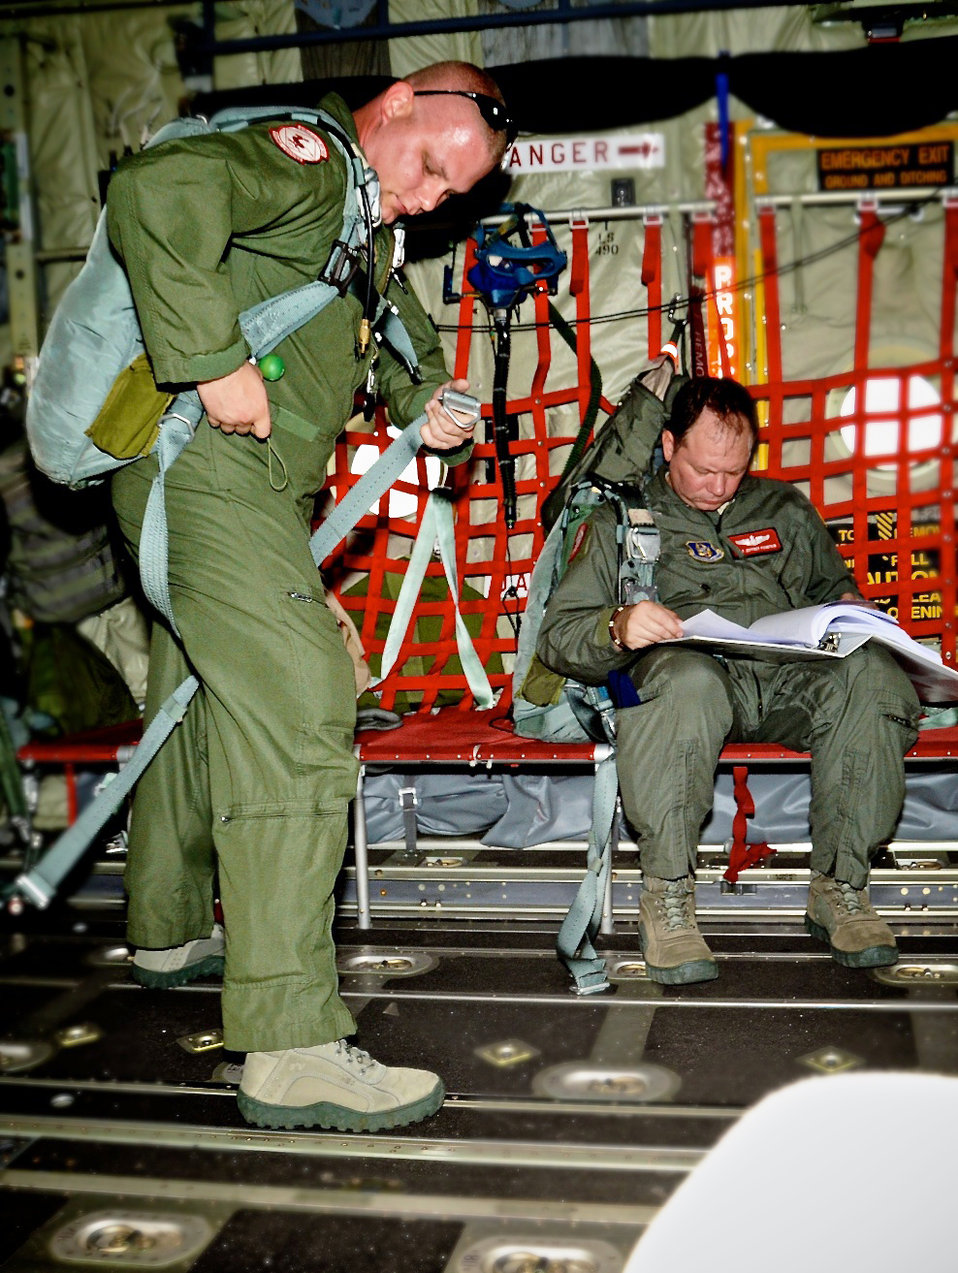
Joint training mission enables reservists to train as they fight

Staff Sgt. Chris Caso adjusts his gear while Staff Sgt. Jeff Fountain reads up on procedures before a training mission April 12, 2010, in Key West, Fla. Sergeants Caso and Fountain are loadmasters assigned to the 815th Airlift Squadron.